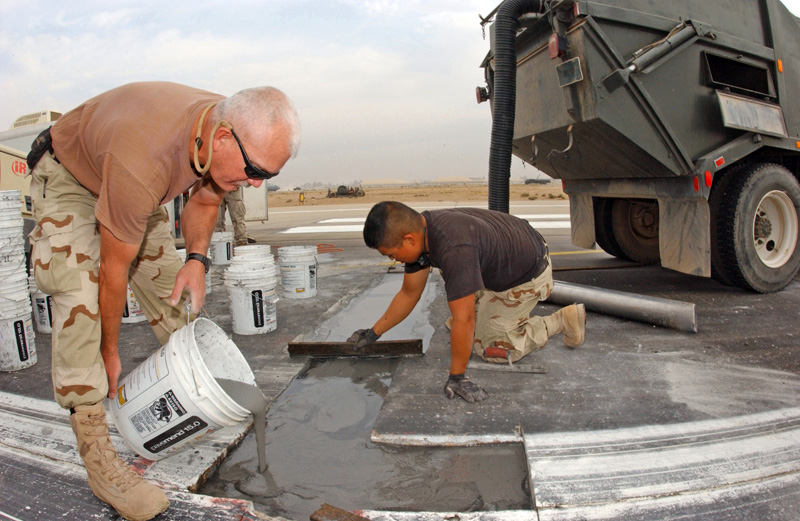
Flightline health

BALAD AIR BASE, Iraq -- (Left to right) Tech. Sgt. James Goetz deployed from Dyess Air Force Base, Texas, pours concrete as Senior Airman Tad Sindelir deployed from Davis-Monthan Air Force Base, Ariz., spreads the concrete before it sets. The Pavemend concrete that the 332nd Expeditionary Civil Engineer Squadron Spall Team members use sets between 30 minutes and an hour.